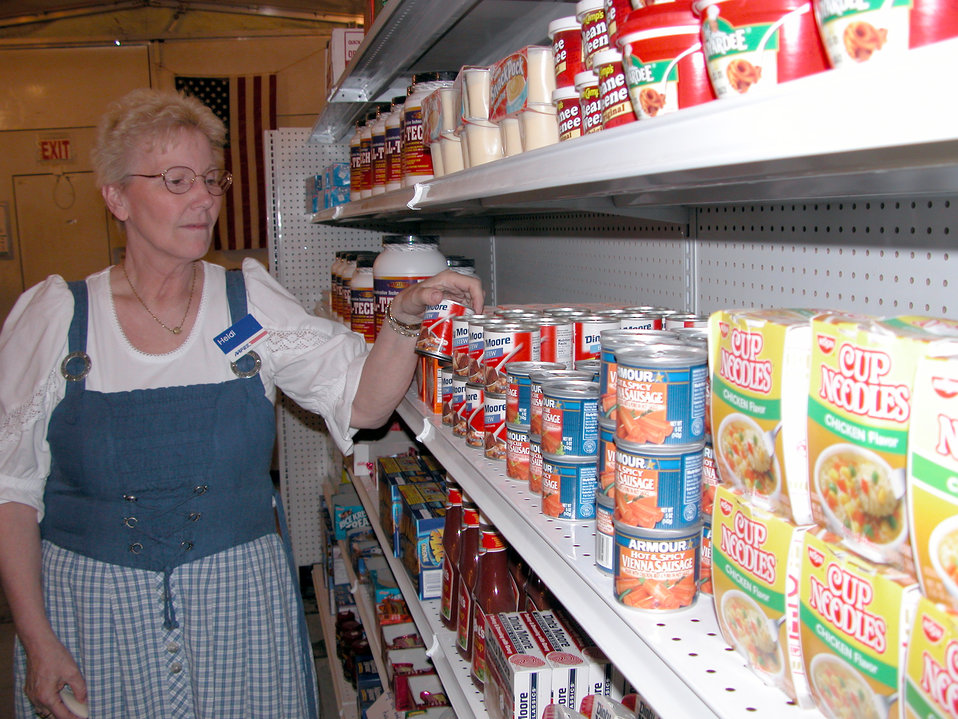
Stocking shelves in Iraq

TALLIL AIR BASE, Iraq -- Heidi Stover checks the shelves at the tent city shopette Jan. 22. She is returning home after a six-month deployment here to support the Army and Air Force Exchange Service's mission.